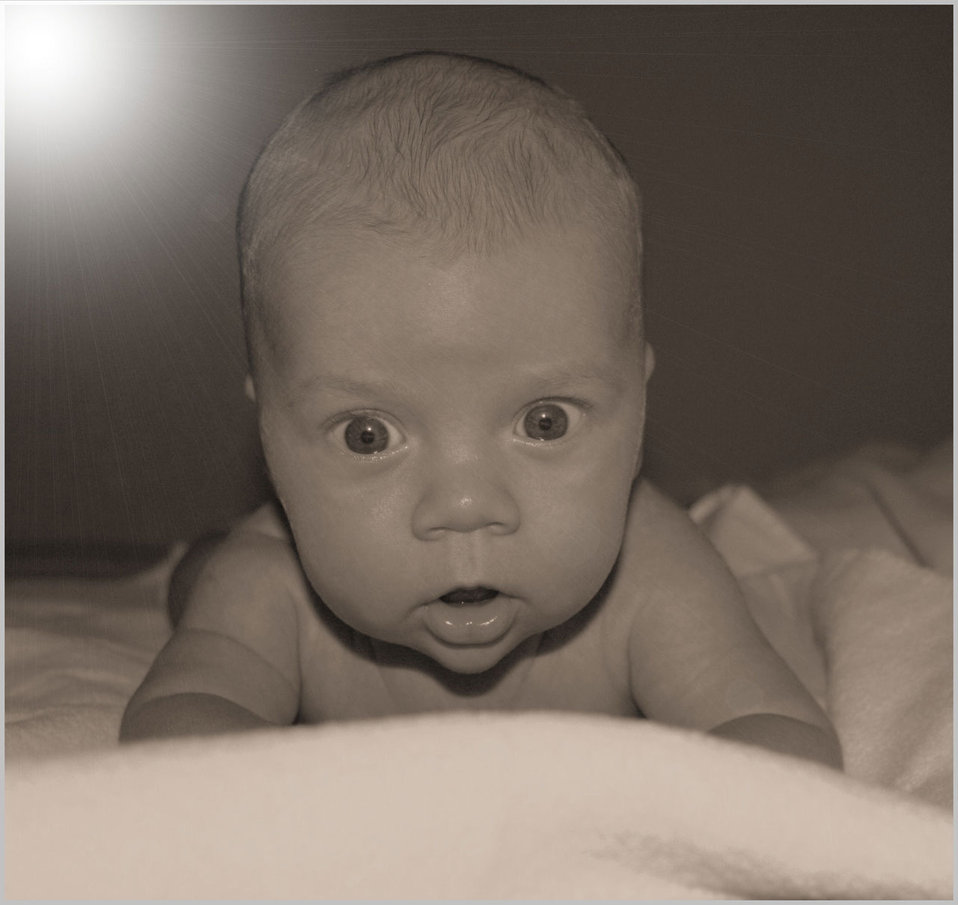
My angel

A gift from above.